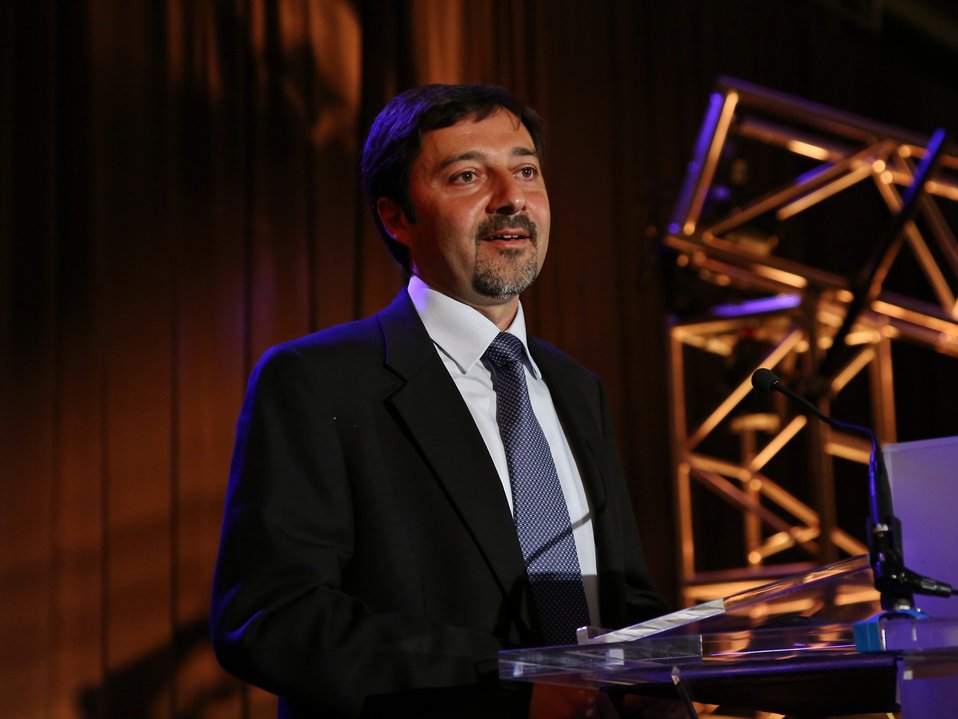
Day 2 Keynote Session 9

Raffi Garabedian, First Solar Chief Technology Officer, provides a keynote address.